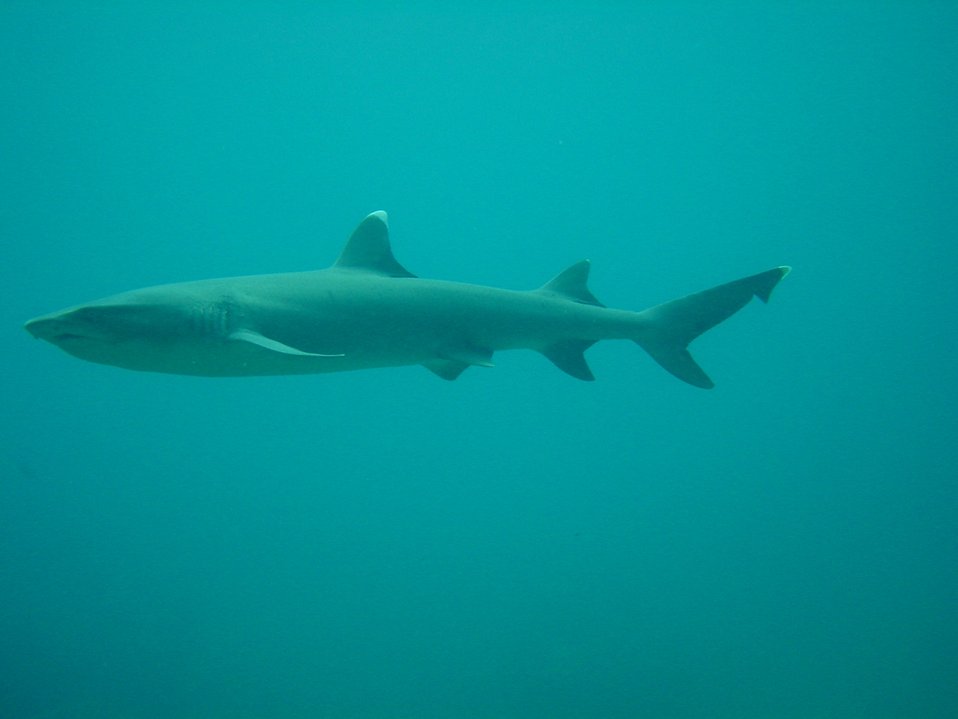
A white-tip shark (Triaenodon obesus). Hawaiian name is mano lalakea.